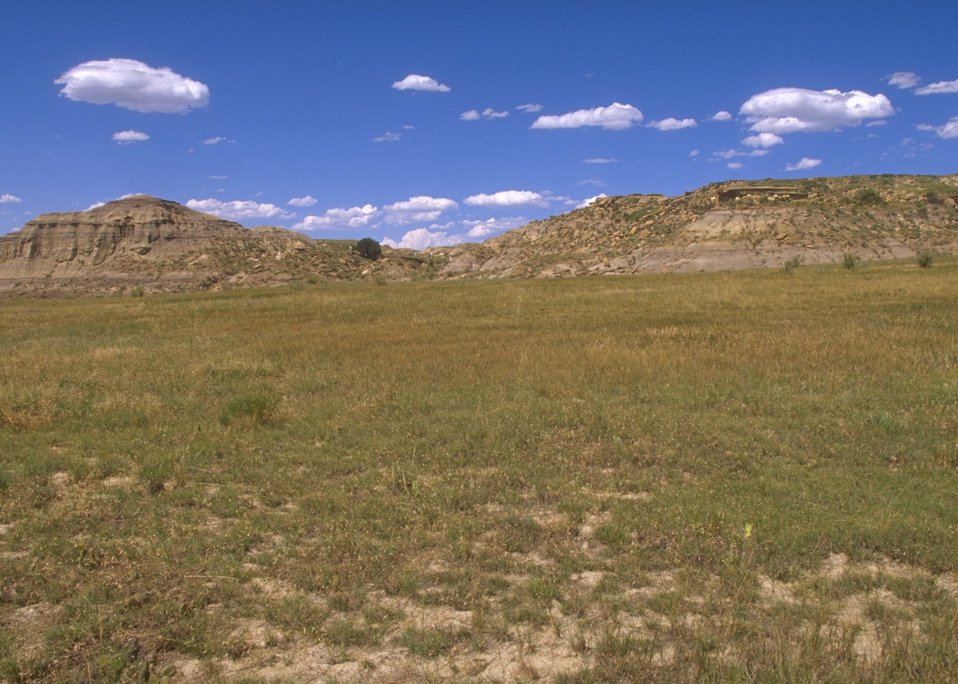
General view of Lance Creek Fossil Area, Newcastle Field Office.